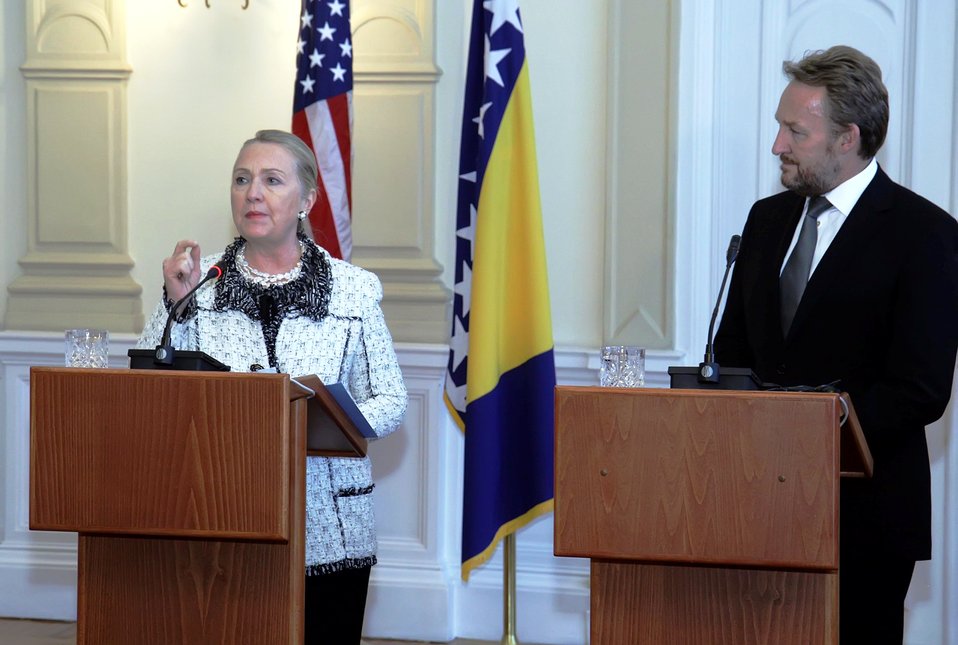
Secretary Clinton and Bosnian Presidency Chairman Izetbegovic Address Reporters

U.S. Secretary of State Hillary Rodham Clinton and Bosnian Presidency Chairman Bakir Izetbegovic address reporters in Sarajevo, Bosnia and Herzegovina, October 30, 2012.